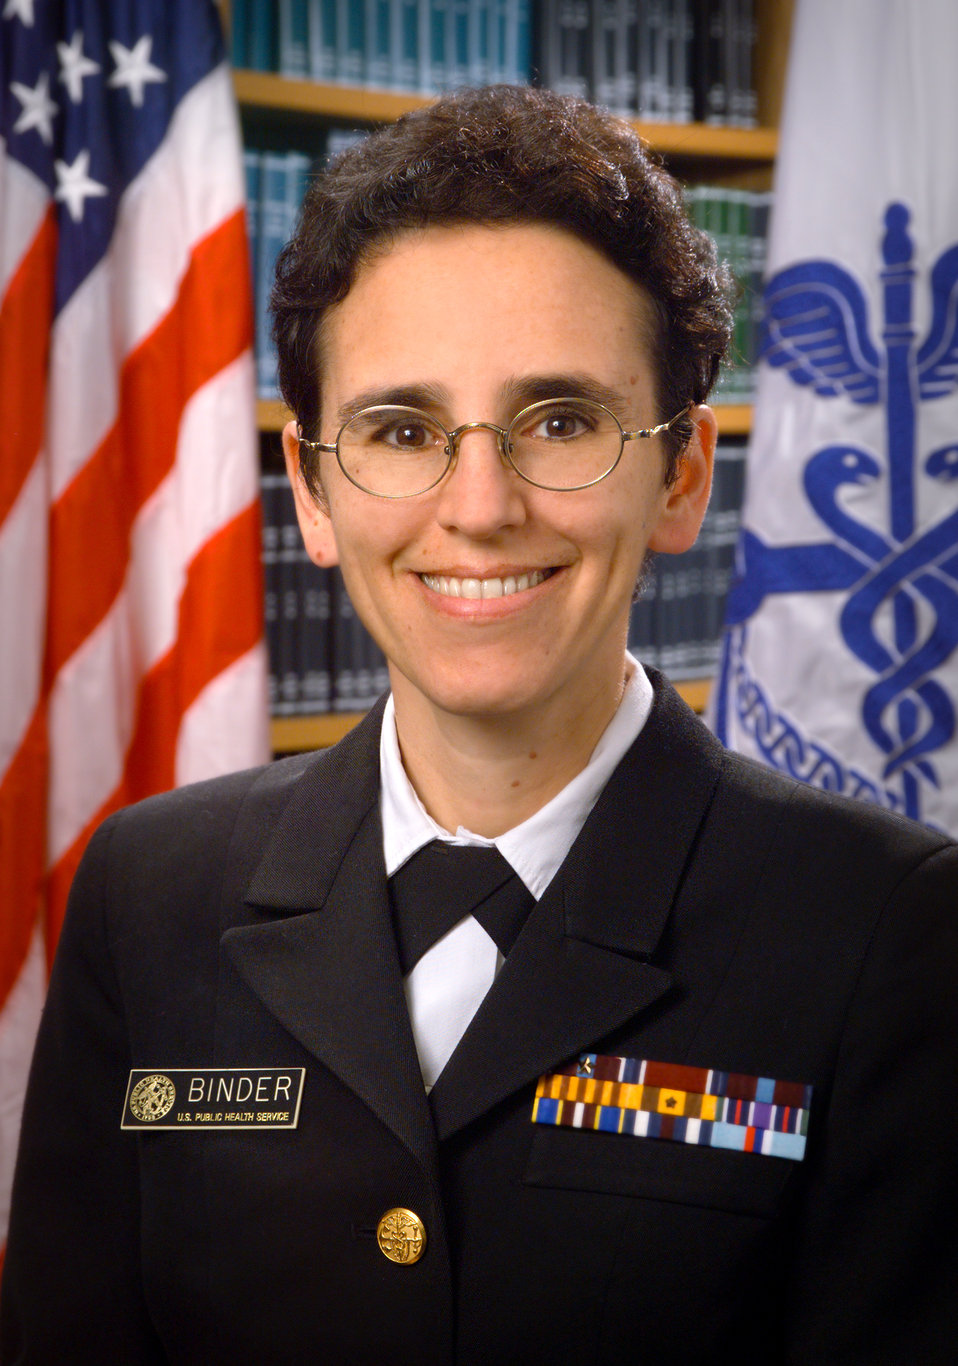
This is Dr. Suzanne Binder, Dir. of the National Center for Injury Prevention and Control at the Centers for Disease Control.